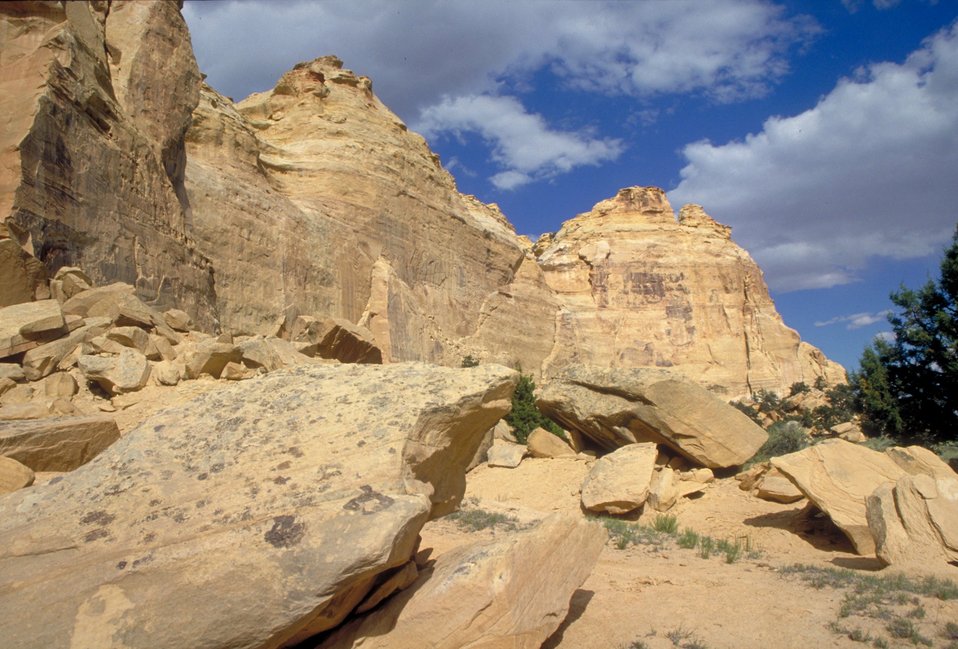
Head of Sinbad, San Rafael Swell